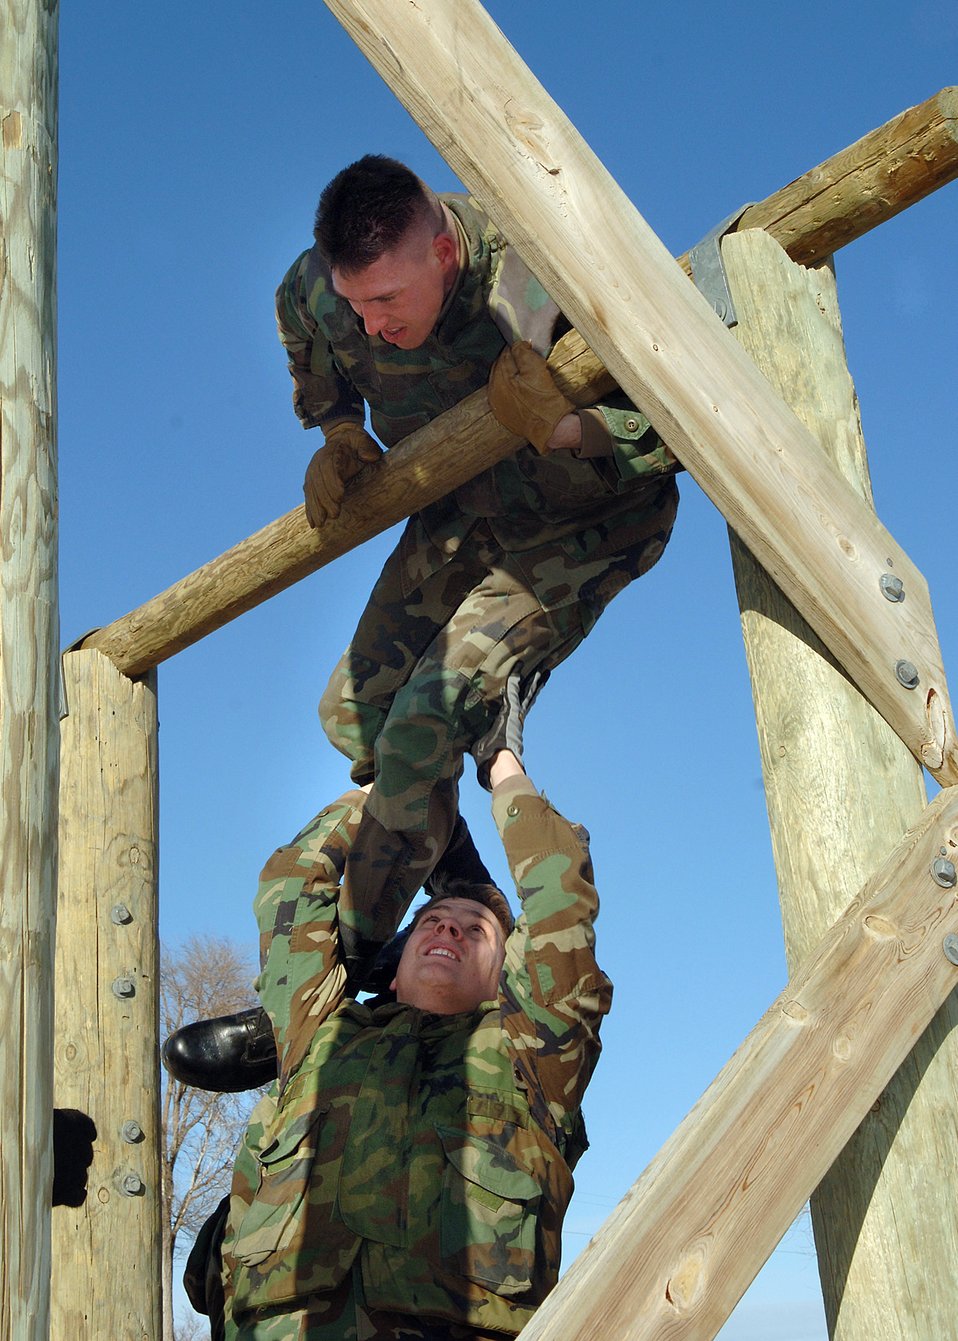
Buddy system

ELLSWORTH AIR FORCE BASE, S.D. (AFPN) -- Senior Airmen Geoffrey Gould and Jerry Gray use the buddy system to climb over the bar at the confidence course Feb. 8. This segment of Airman Leadership School is used to increase morale and promote teamwork. The Airmen are assigned to the 28th Maintenance Squadron here.